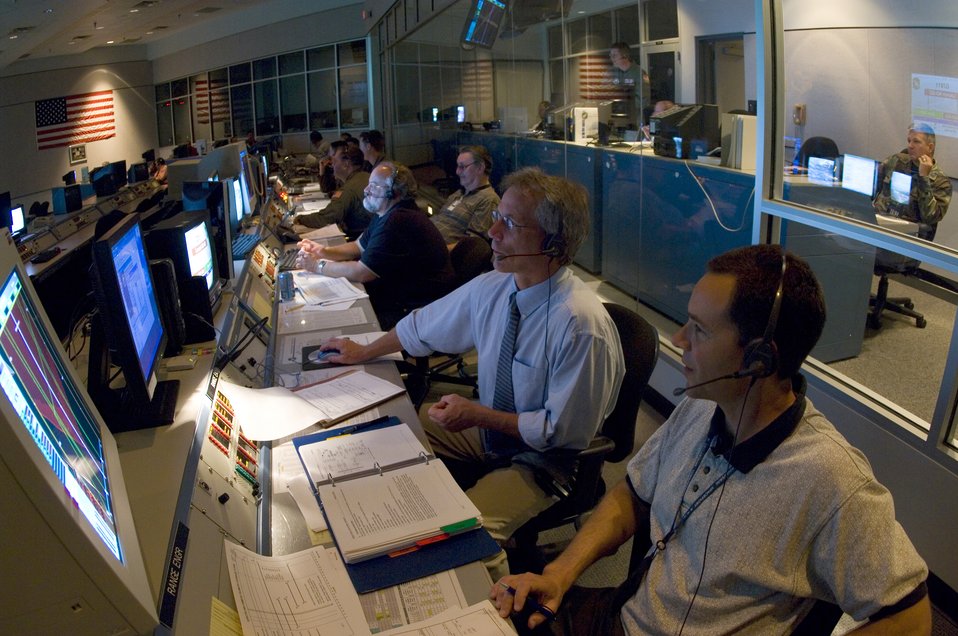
Florida ICE

Members of the 45th Space Wing follow launch procedures during an integrated crew exercise, or ICE, on Thursday, April 13, 2006, at Cape Canaveral Air Force Station, Fla. The ICE tests personnel practices, anomaly resolution procedures and team communications. This is the final step in preparation for an April 20 launch that will carry a commercial satellite into orbit using an Atlas launch vehicle.